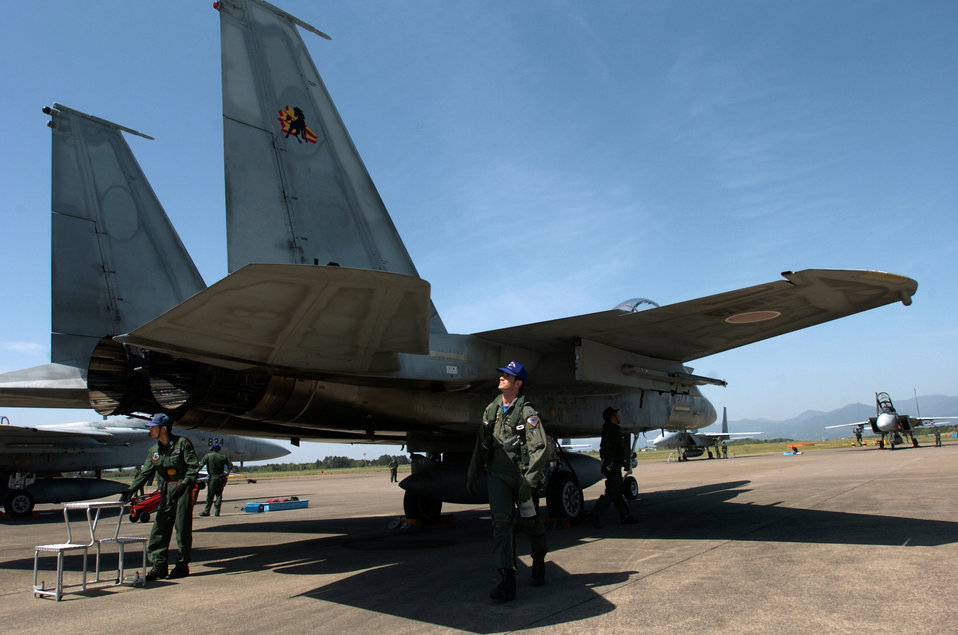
Air Force aviator strengthens U.S.-Japan friendship, ties

NYUTABARU AIR BASE, Japan -- Capt. Justin Fletcher inspects his F-15 Eagle before a mission. Captain Fletcher provides F-15 pilot techniques and counterair tactics to Japanese airmen here. He is a pilot and exchange officer assigned to the 23rd Fighter Tactical Squadron.